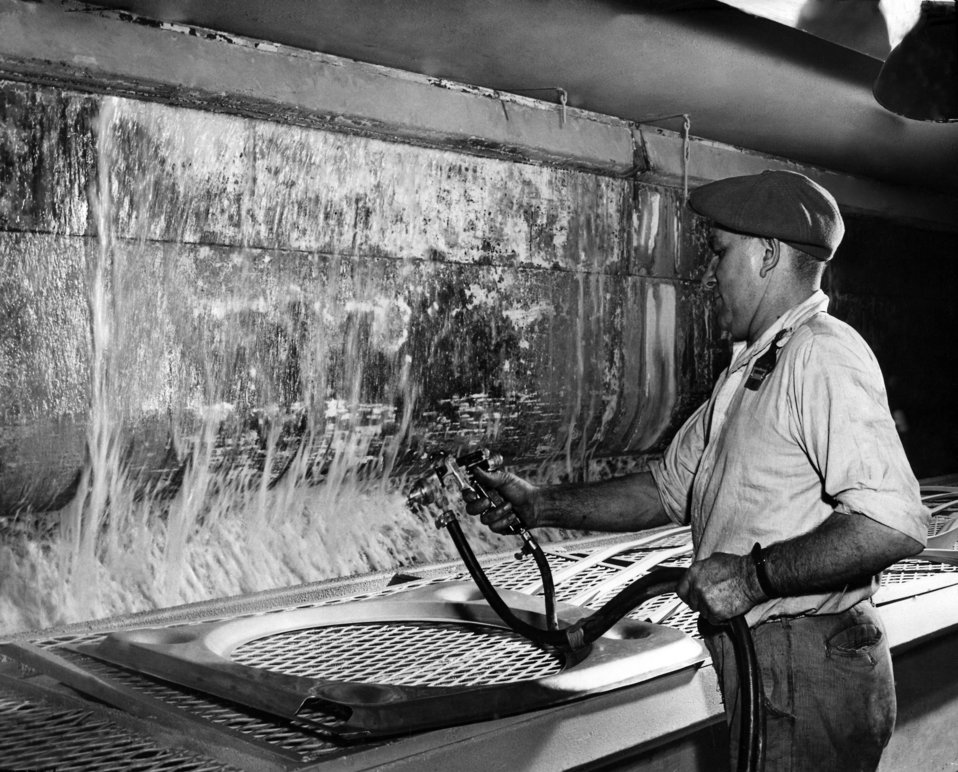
This historic 1947 image was provided by the Center for Disease Control's (CDC), National Institute for Occupational Safety and Health (NIOSH), depicted an industrial worker who was spraying a mist of chrome paint in a ventilated paint spray booth. The booth had been equipped with a negatively pressurized environment, whereupon, an air current was created that sucked the suspended chrome paint mist into a trough containing running water, which carried the excess paint spray out of the booth. This photograph was published in both the February, 1947, edition of the 'Industrial Bulletin, New York', pg. 19, and the April, 1951, edition of the 'Industrial Health Monthly' (formerly the 'IH Newsletter'). Even though the booth was ventilated, the worker should have been wearing a filtered breathing mask, and to protect against spatter contamination, heavy-duty gloves, and even a pair of goggles.